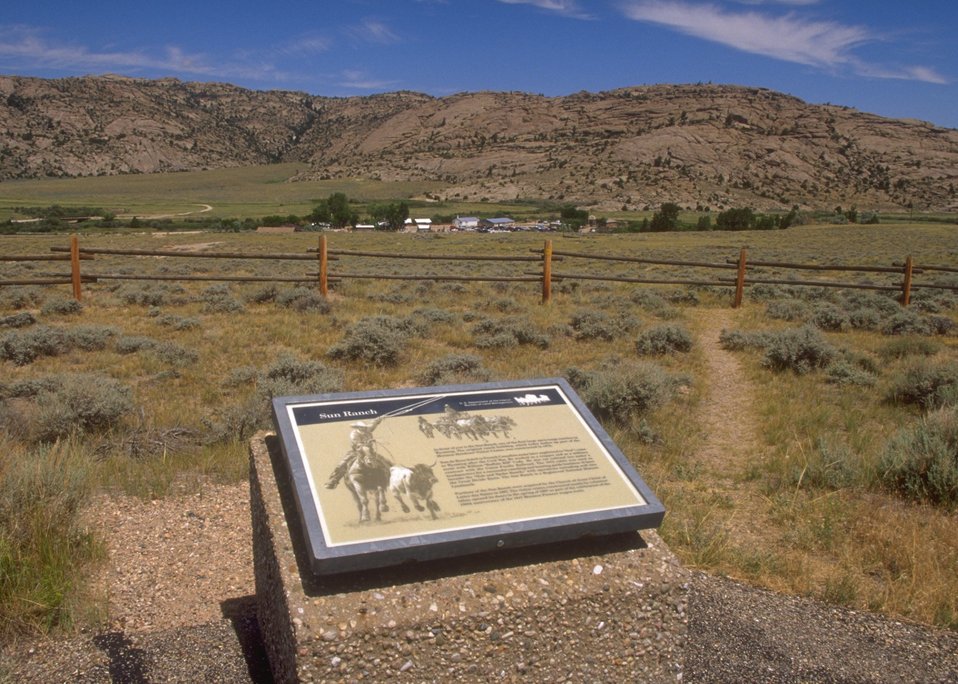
Devil's Gate BLM interpretive site along the Oregon & Mormon Trail, Rawlins Field Office